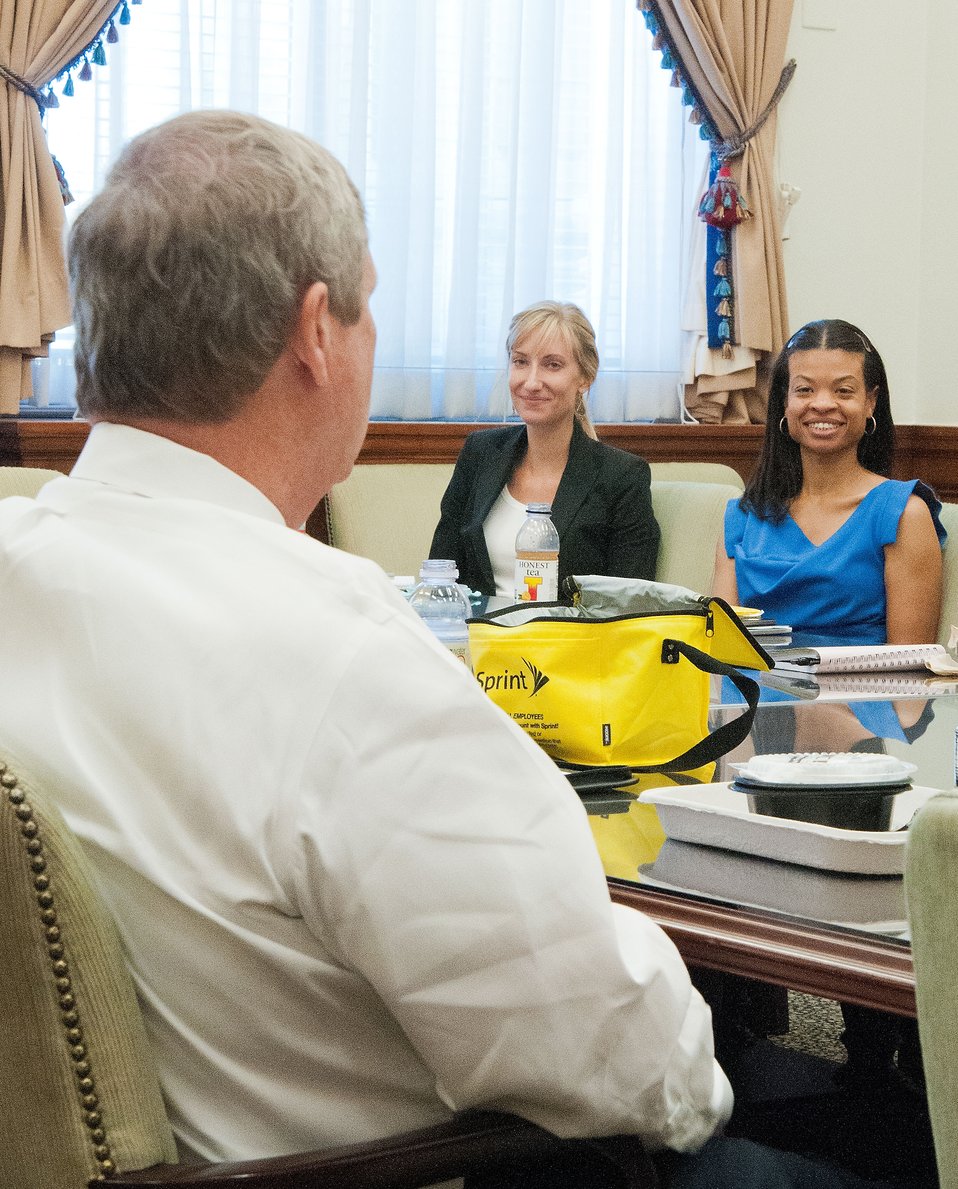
Agriculture Secretary Tom Vilsack meets with United States Department of Agriculture employees in Washington, D.C. for a Brown Bag lunch to discuss the role they play and to thank them for their dedication and diligence. The most recent luncheon was held on Wednesday, July 25, 2012. From left: Agriculture Secretary Tom Vilsack, Rebecca Shively, Farm Services Agency and Janel Barsi, Animal and Plant Health Inspection Service.